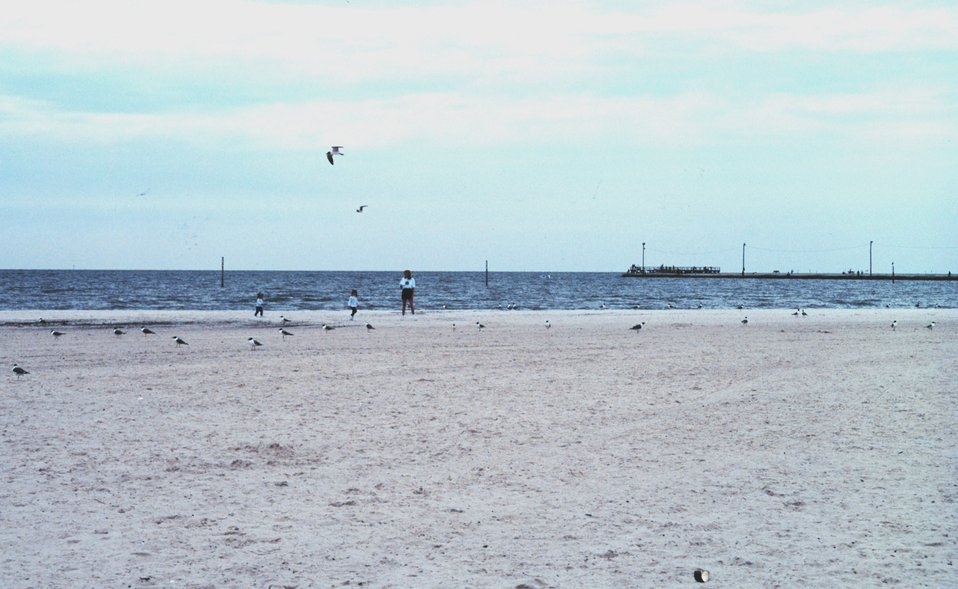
Sea birds along a nearly deserted beach